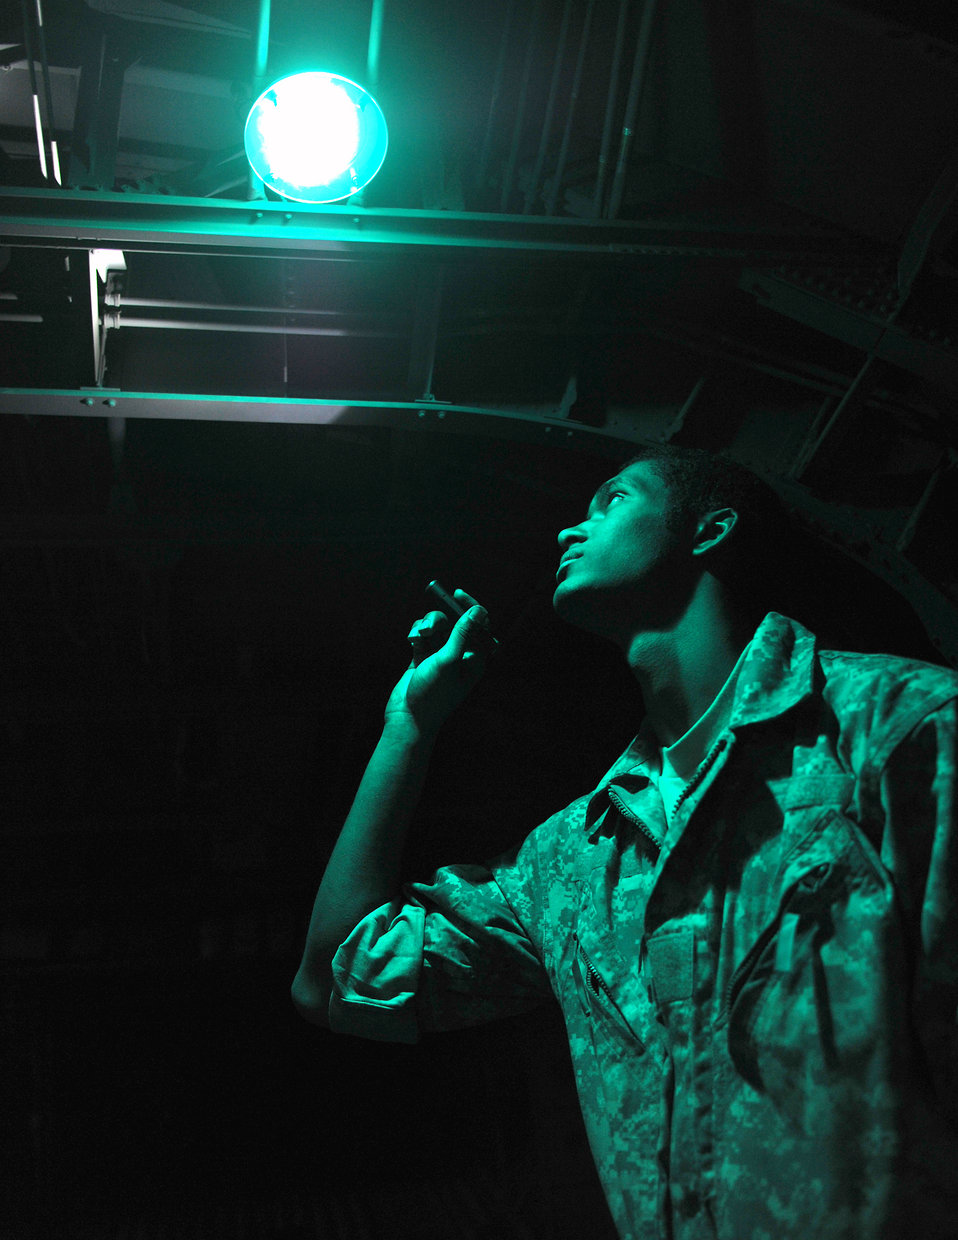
C-130 maintenance operations

Senior Airman Bruce Allen performs a preflight check on the cargo deck of a C-130 Hercules March 24, 2011, at Little Rock Air Force Base, Ark. Airman Allen is a crew chief assigned to the 19th Aircraft Maintenance Squadron.